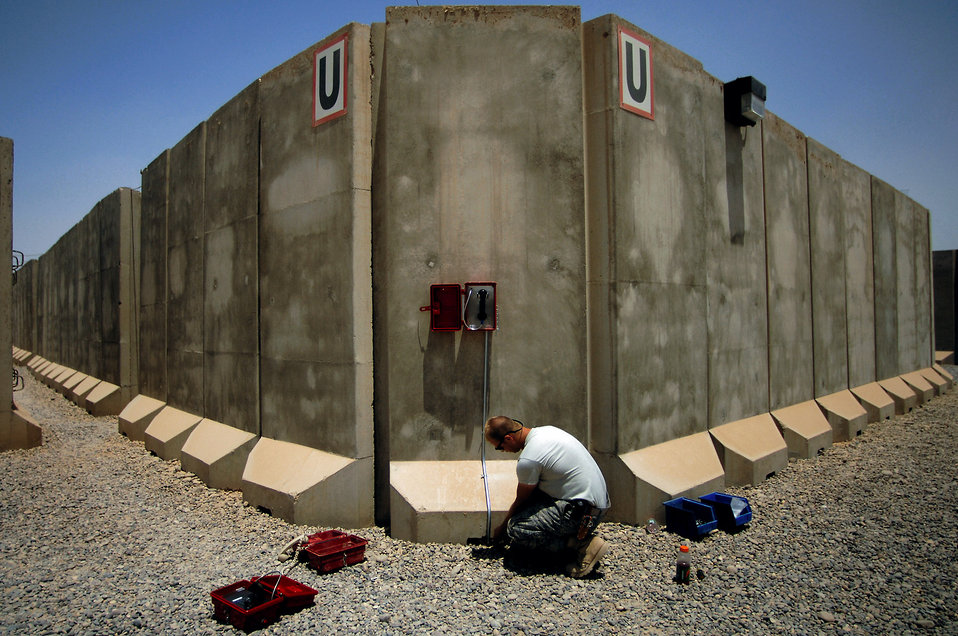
Emergency life line

Airman 1st Class Marc Spehalski installs a new emergency phone in the Air Force housing area June 13 at Balad Air Base, Iraq. More than 120 lines were installed throughout the housing area so servicemembers can give notice during accountability checks. Airman Spehalski is a 332nd Expeditionary Communications Squadron infrastructure technician deployed from F.E. Warren Air Force Base, Wyo.